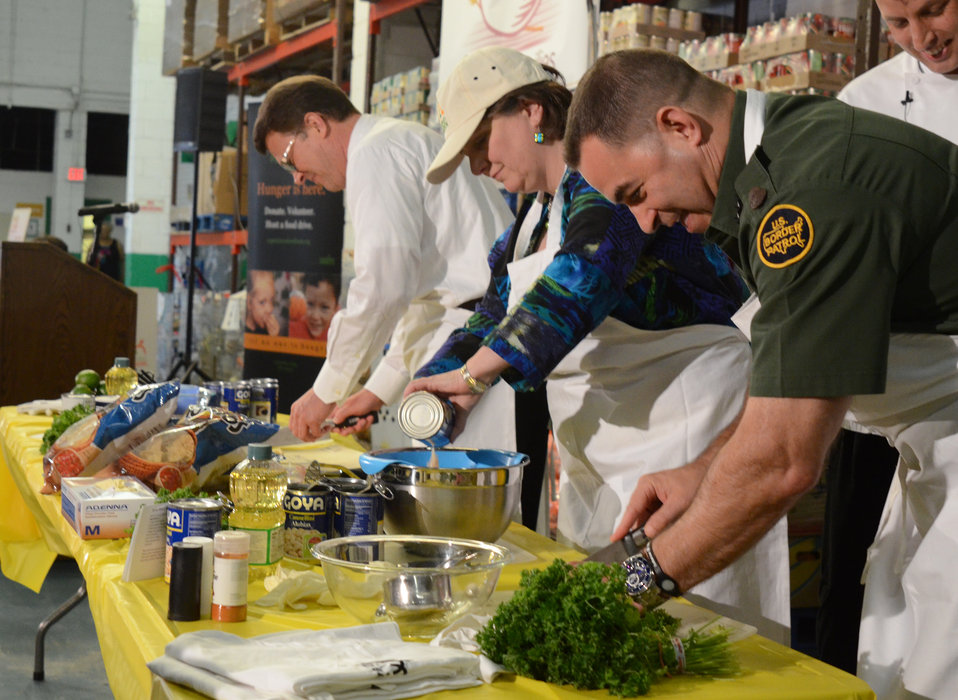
Left to right, John Berry, U.S. Office of Personnel Management (OPM) Director, Agriculture Deputy Secretary Kathleen Merrigan and Michael J. Fisher, Chief, U.S. Border Patrol prepares food at the Feds Feed Families Kick-Off event at the Capital Food Bank in Washington, D.C., on Monday, June 11, 2012.